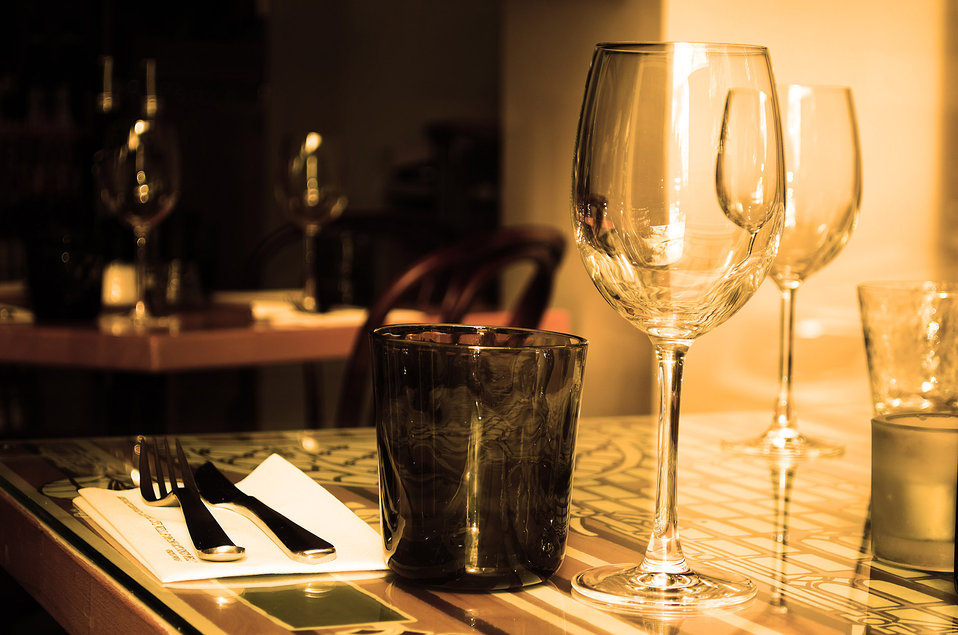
Table and wine glass.